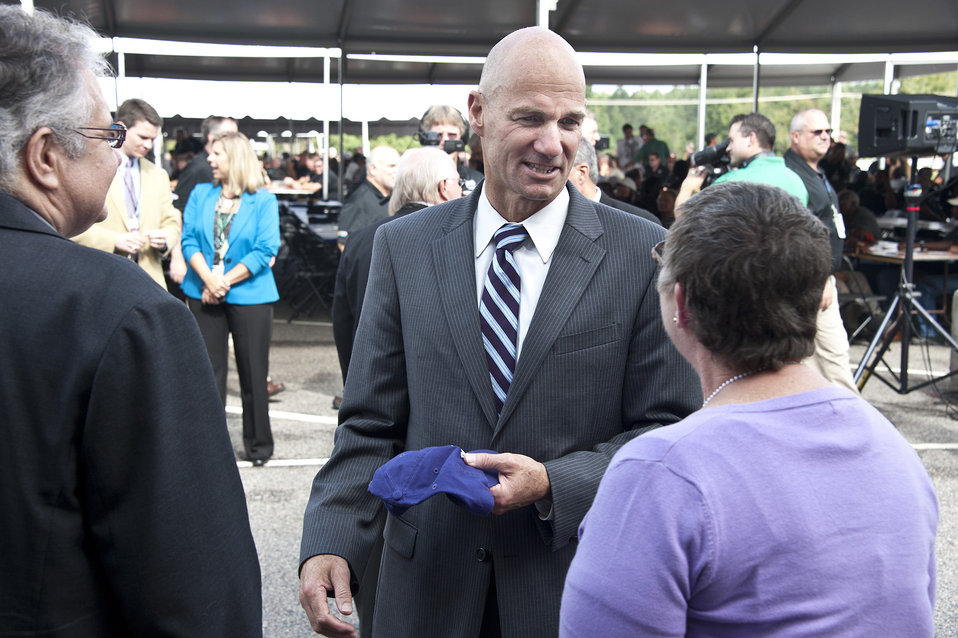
Thomas P. D’Agostino, Undersecretary for Nuclear Security and Administrator, NNSA